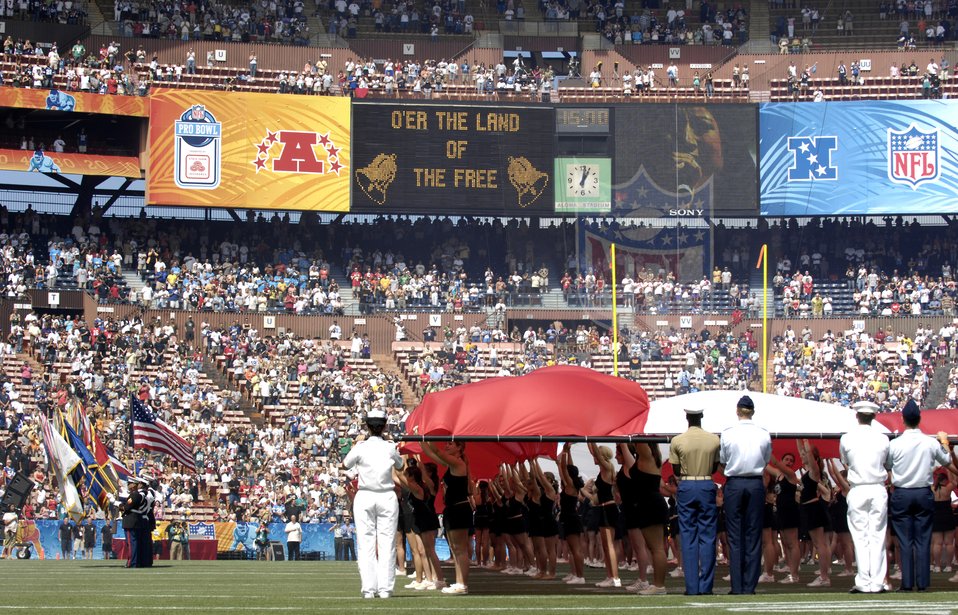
Pro Bowl Airmen

Servicemembers stand at attending during the national anthem at the 2007 Pro Bowl Feb. 10 at Aloha Stadium in Hawaii. Servicemembers from all branches of the U.S. military in Hawaii participated in Pro Bowl activities. The Pro Bowl brings together the top players in the National Football League.